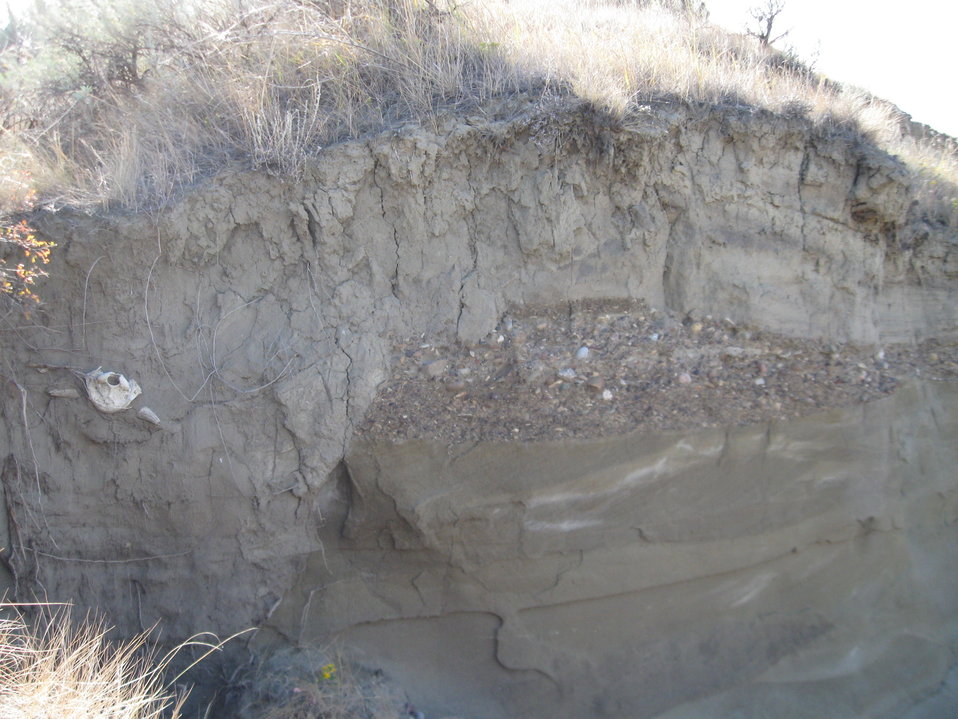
Bison Skull

A bison skull emerges from a stream bank on Charles M. Russell NWR.